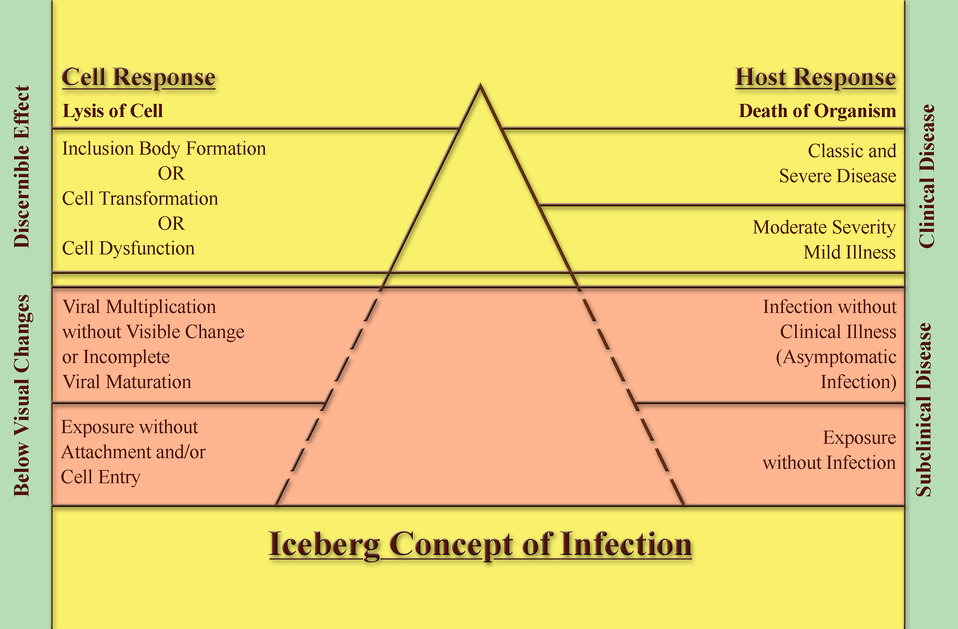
This diagram illustrates the classic iceberg concept of infection, dividing the seen, or discernible effects of a disease process, from the effects that are unseen. The disease process begins at a point of inoculation, reaching the prodromal, or earliest onset of symptoms, and eventually becoming a full blown, observable clinical disease, where it reaches the tip of the iceberg.